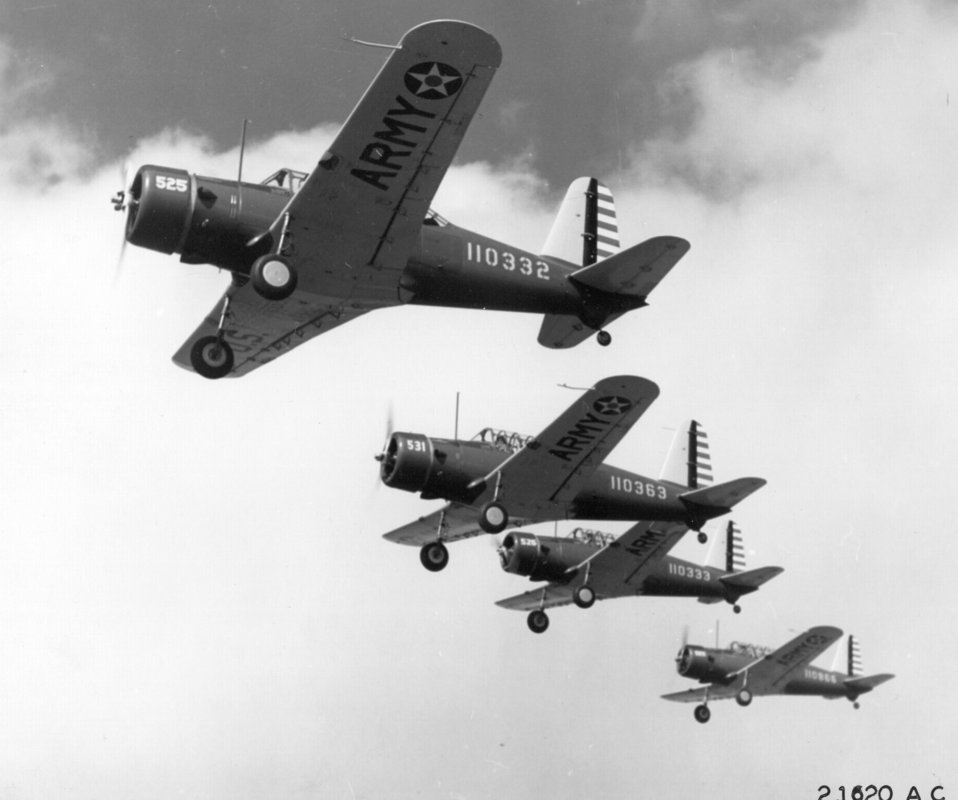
Vultee BT-13

1940's -- Vultee BT-13s in flight